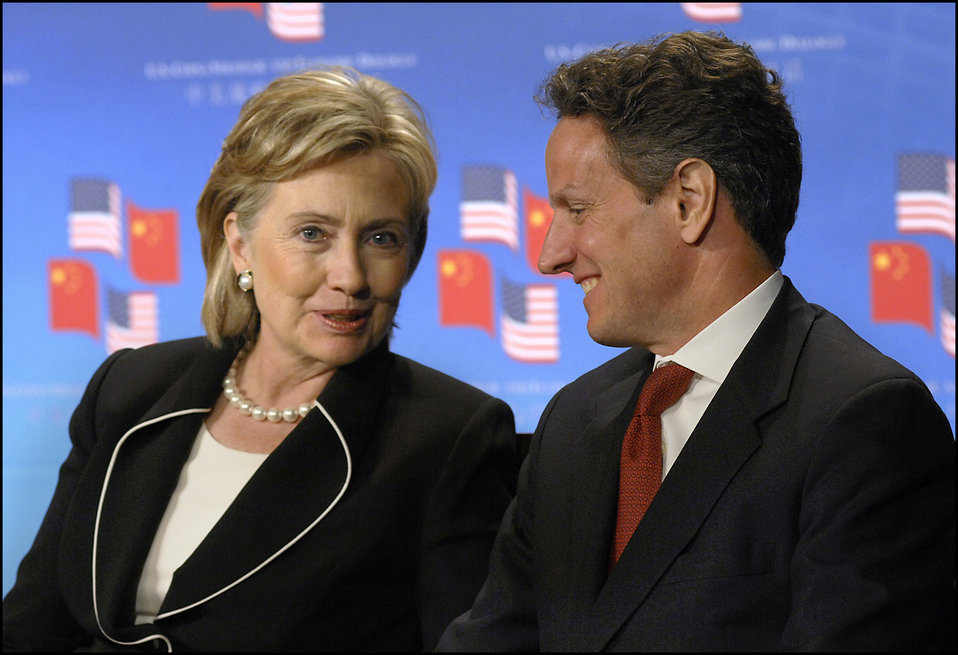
SandED: July 27-28, 2009

Secretary of State Hillary Clinton and Secretary of the Treasury Tim Geithner at the opening ceremony for the S&ED.